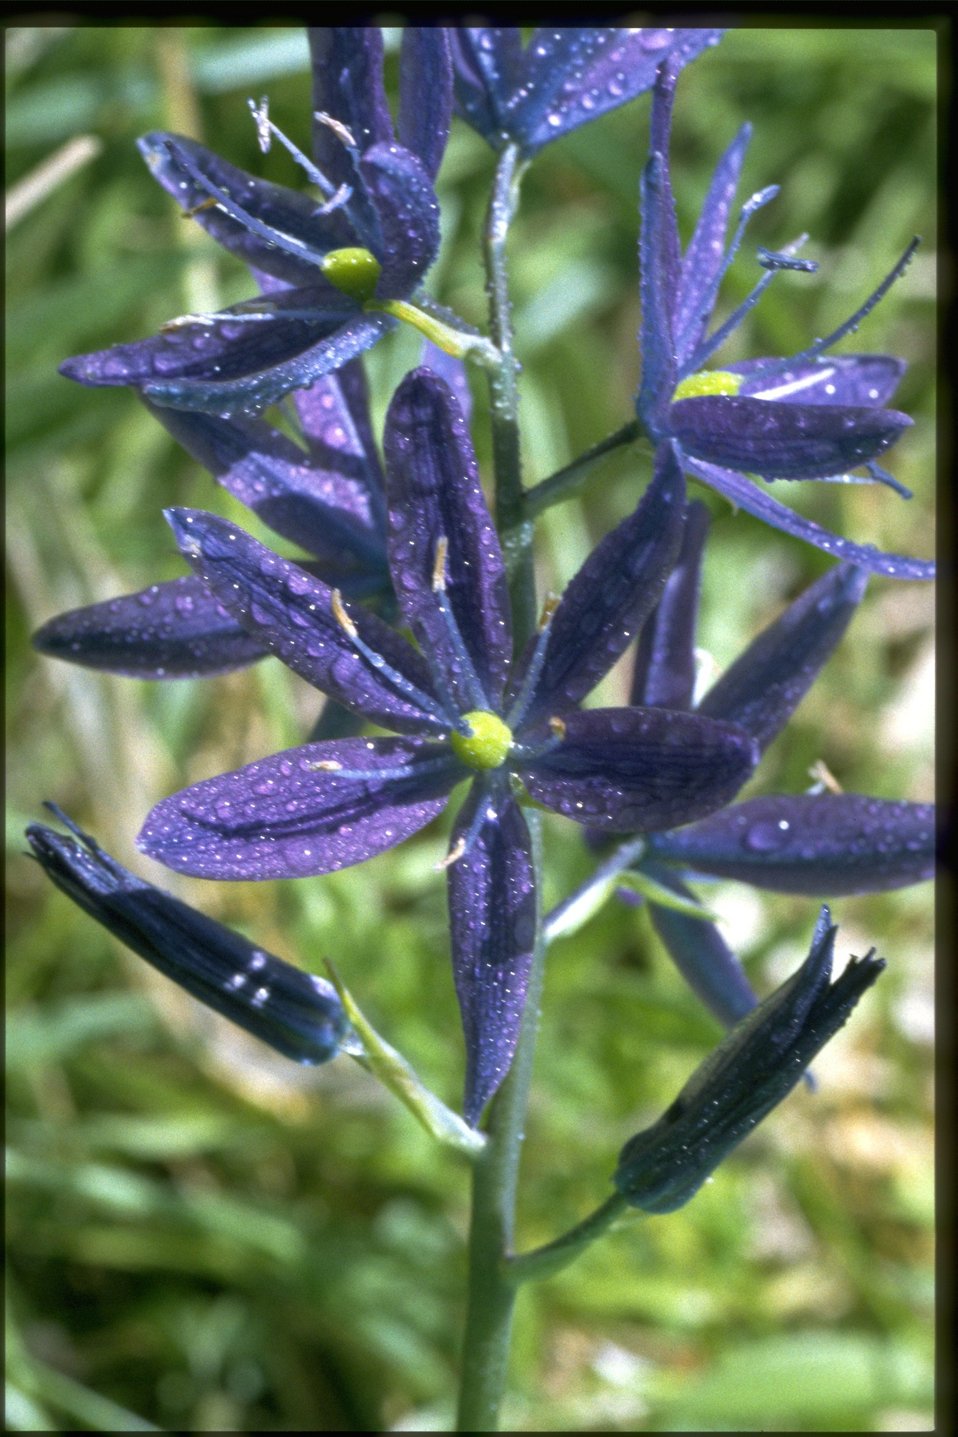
Medium shot of Camassia quamash.